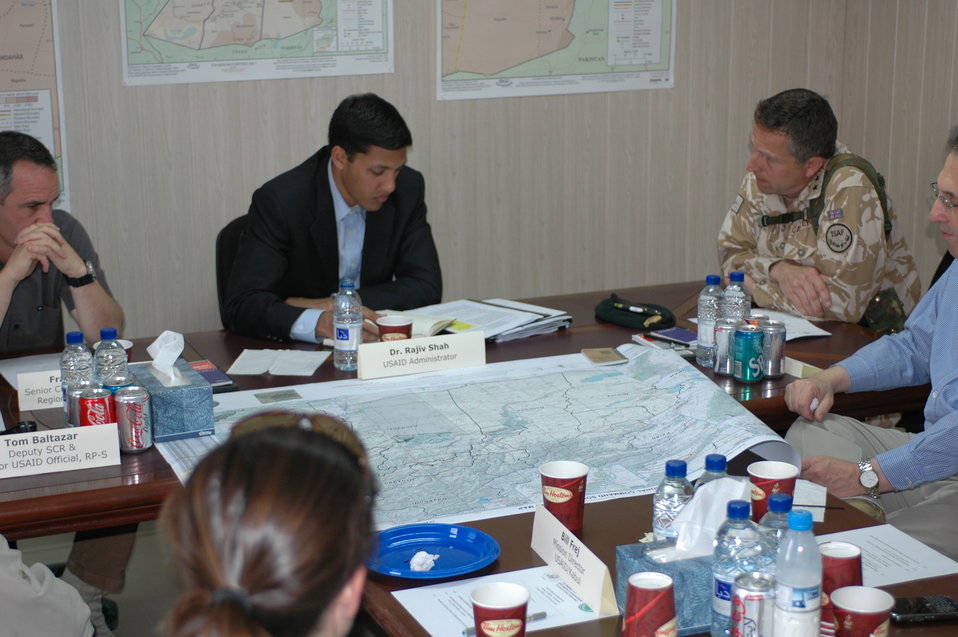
Dr Shah Visits Kandahar April 9, 2010